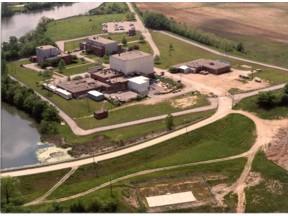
Columbus Site

An aerial photo of the laboratory facilities at the Columbus Site located in Ohio before cleanup operations had begun. Since this photo was taken, DOE has demolished buildings and shipped waste out of Ohio. Cleanup operations are now complete and the site has been transferred back to its owner, Battelle Memorial Institute, for unrestricted industrial reuse.